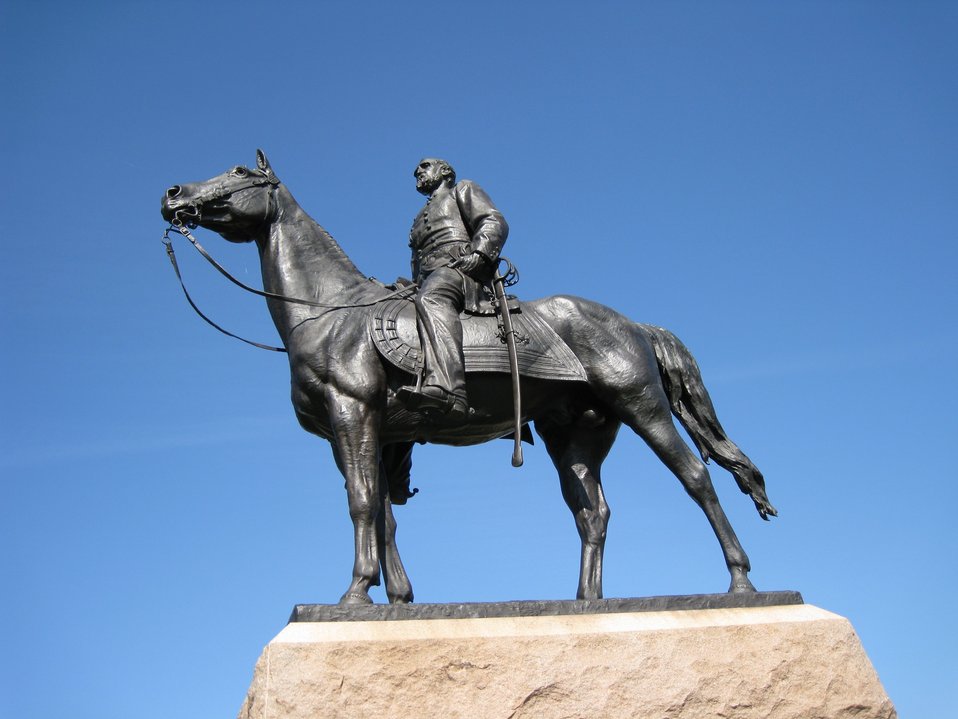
Statue of George Gordon Meade, the victorious general at the Battle of Gettysburg.